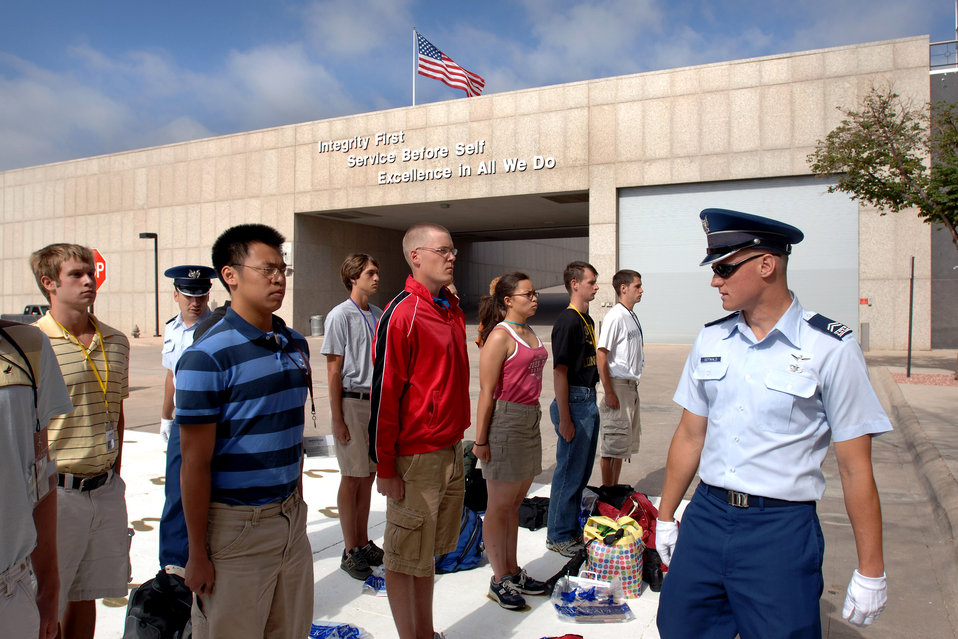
Welcome to the Air Force

Cadet 2d Class Carl Gatwald inspects basic cadet trainees as they inprocess as the Class of 2011 June 28 at the U.S. Air Force Academy in Colorado. The 1,304 members of the U.S. Air Force Academy's Class of 2011 arrived to inprocess and begin basic cadet training here.